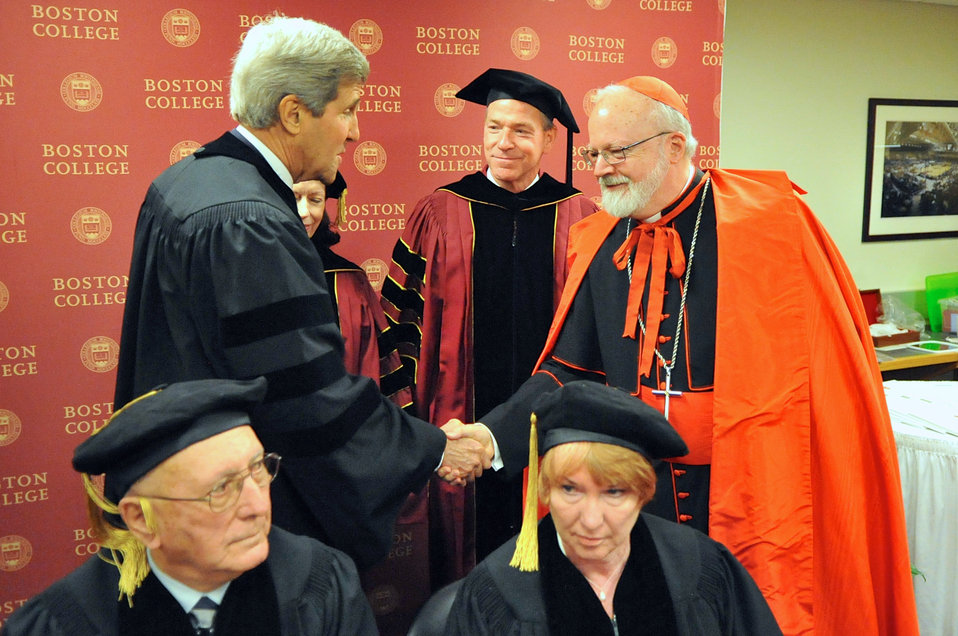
Secretary Kerry Greets Cardinal O'Malley Before Boston College Graduation

U.S. Secretary of State John Kerry greets Cardinal Sean O'Malley before entering Alumni Stadium to deliver the commencement address at Boston College in Boston, Massachusetts, on May 19, 2014.